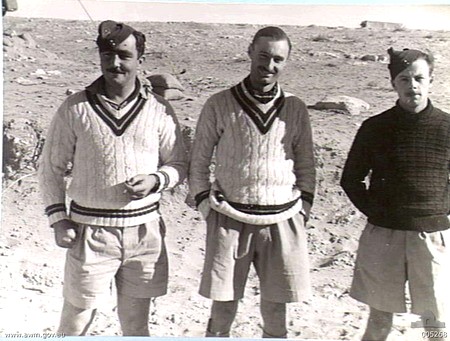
Informal group portrait of three pilots of No. 3 Squadron RAAF engaged in operations over the Western Desert. Identified from left to right: 270526 Engineering Officer Lex D'arcy Winten of Brisbane, Queensland; O34059 Flight Lieutenant Gordon Henry Steege of North Sydney, NSW (later Air Commodore); and 272 Flying Officer Arthur Alan Gatward of Wahroonga, NSW (killed on flying operations over the Middle East on 19 February 1941).